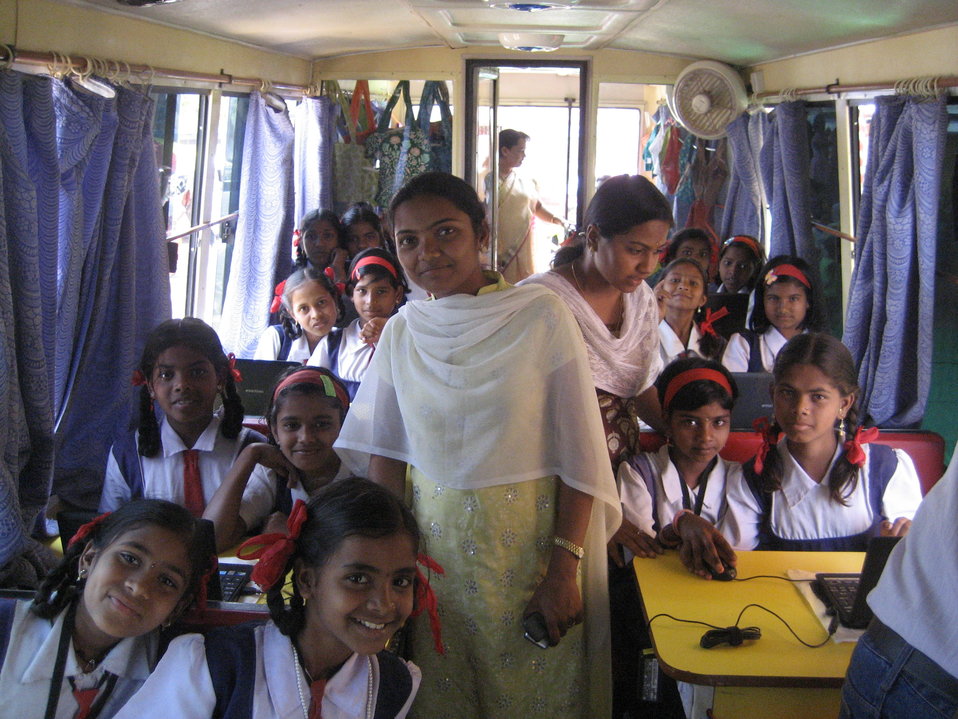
Lael Brainard's Visit to India

Under Secretary Brainard met with young women participating in the Mann Deshi Foundation’s Mobile Business School Program, which provides financial literacy courses, computer literacy and livelihood training from a bus that travels from village to village and learned about their participation in the bank’s daily savings program.